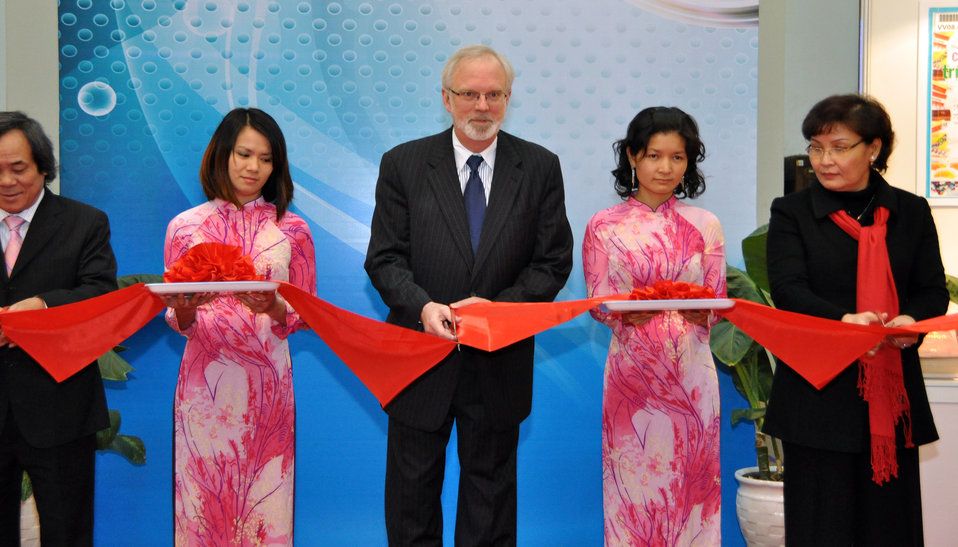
U.S. Ambassador David Shear opens safe medicine exhibition in Hanoi

Safe Medicine Exhibition